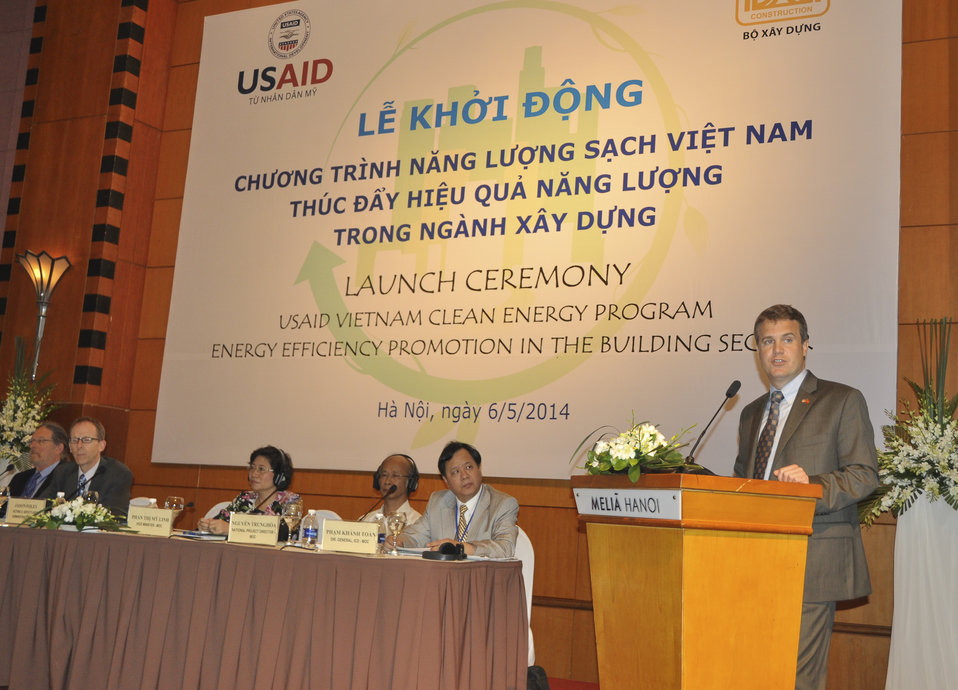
Acting Senior Deputy Assistant Administrator for Asia Jason Foley of USAID speaks at the launching ceremony

Hanoi, May 6, 2014.